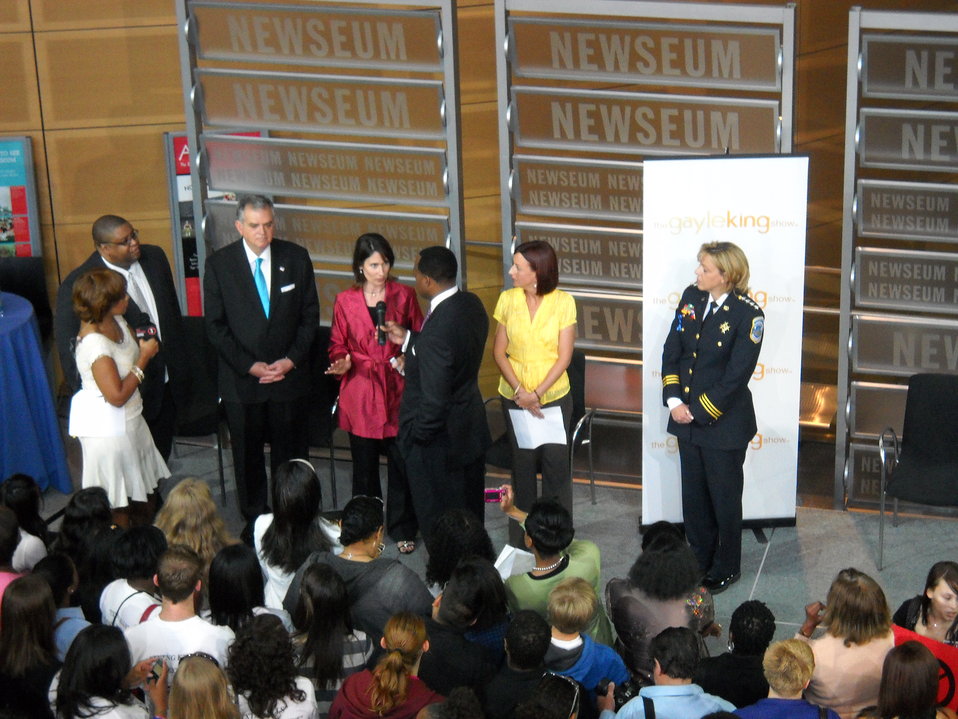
National No Phone Zone Day Newsum Washington, DC April 30, 2010 052